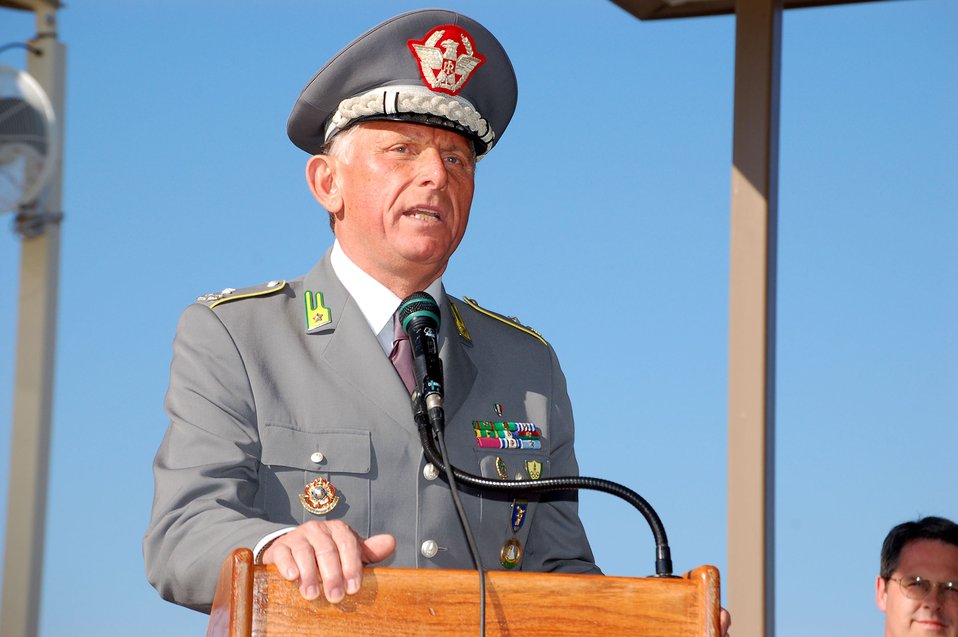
International basketball tournament kicks off at Lackaland

Italian Brig. Gen. Gianni Gola speaks to the crowd attending the opening ceremony of the 2008 International Military Sports Council Basketball Tournament April 14 at Lackland Air Force Base, Texas. The tournament features teams from the United States, Greece, Italy, South Korea, Canada, Latvia and Lithuania. General Gola is the president of the International Military Sports Council.